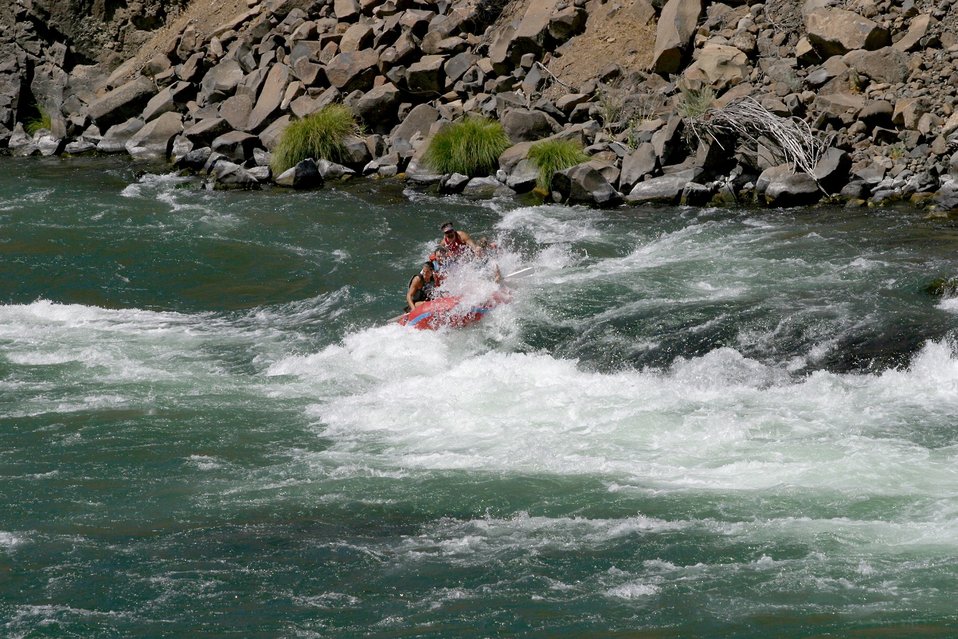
Boxcar Rapids class III, has large waves with a small drop that form turbulent currents. 7/26/03 Pelton Dam 3600 cfs: Moody Rapids 4300 cfs.